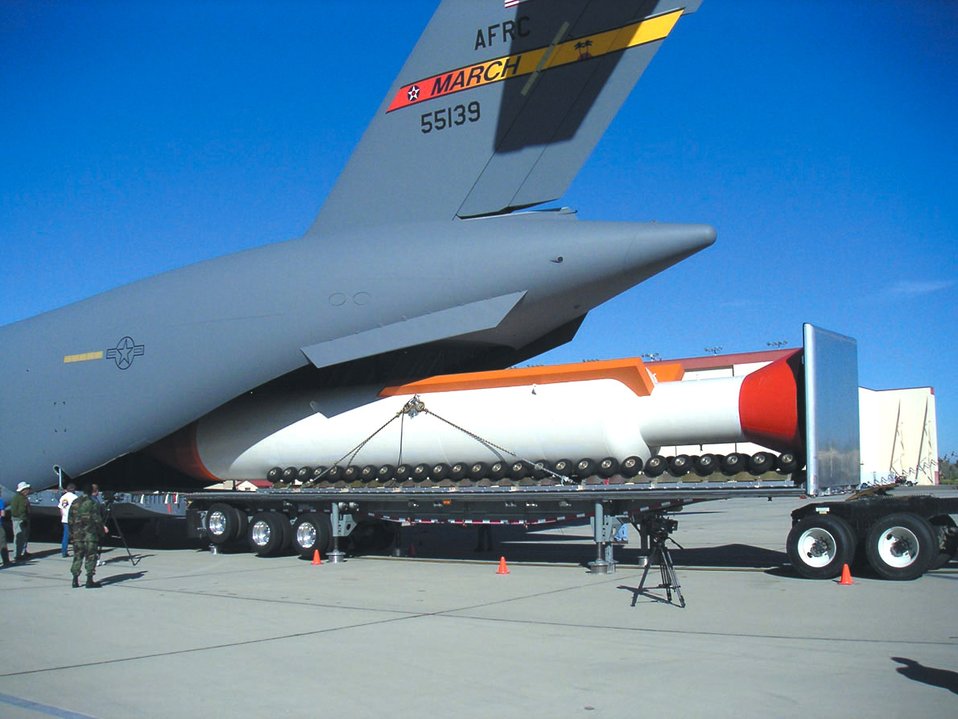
Edwards, DARPA explore new C-17 capability

EDWARDS AIR FORCE BASE, Calif. -- Test crews load, a 65-foot mock-up booster rocket onto a C-17 Globemaster III. The rocket will be used to test aerial launch capabilities for rockets.